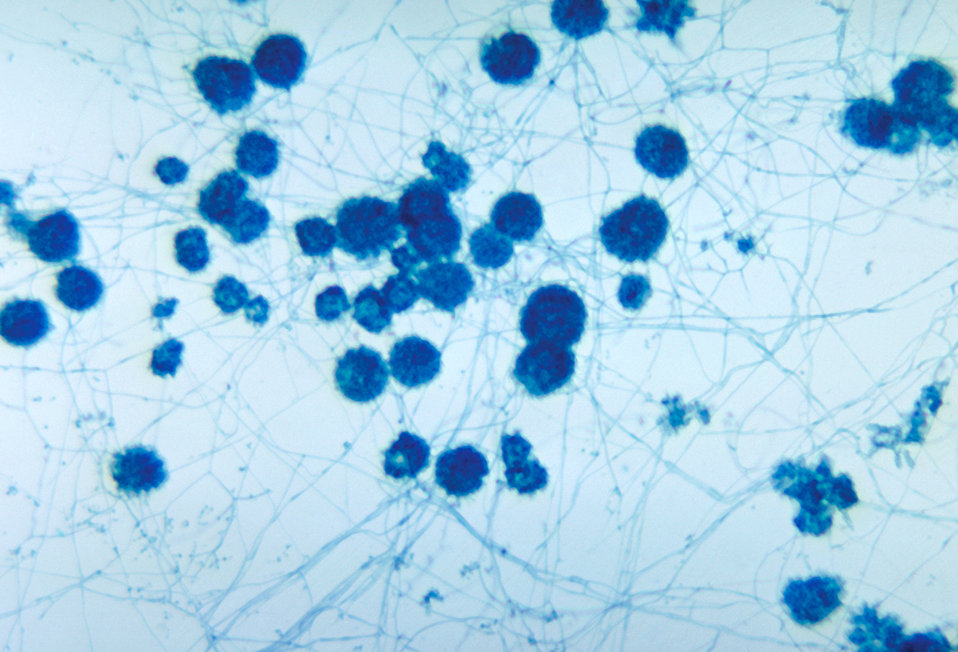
This is a photomicrograph showing conidia-laden conidiophores of a Tritirachium sp..